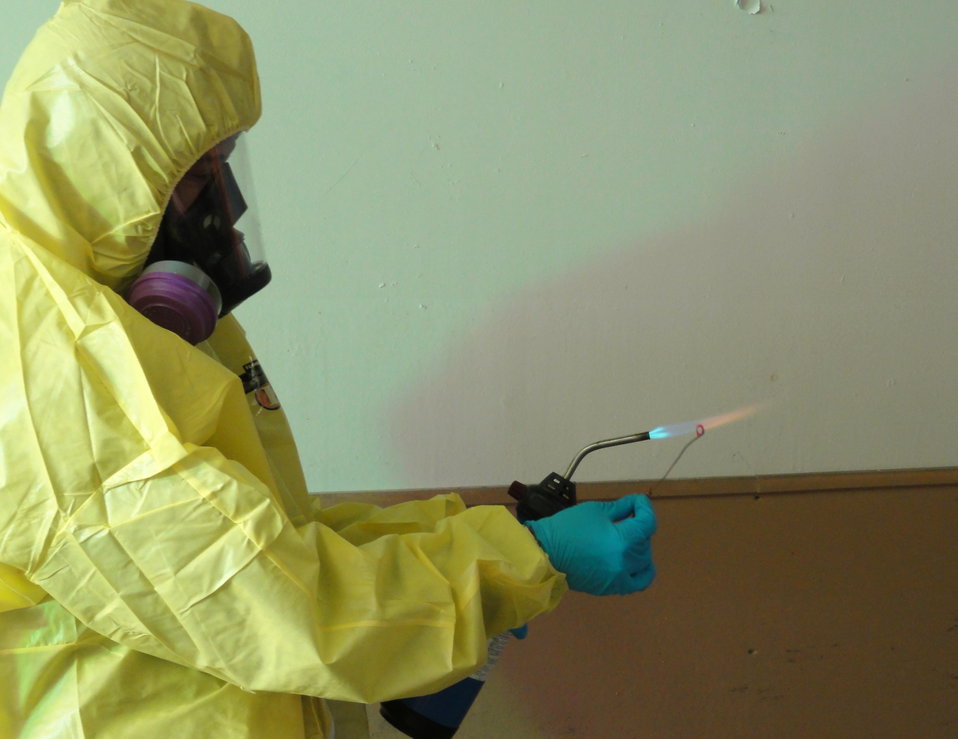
December 2, 2012 - Normal flame color in Hazard Test.

Here you can see the difference between the wire dipped in the sample (green flame) indicating a chlorinated compound versus the clean water sample which displays no color change.